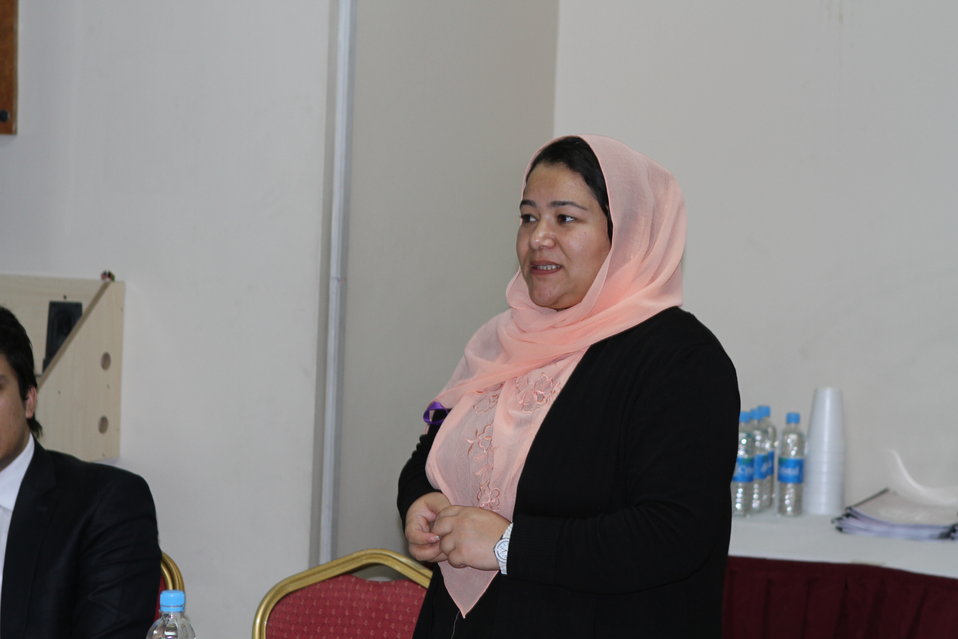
Presentation of the ACTA Civil Society analysis of the FY 1392 Afghan national budget